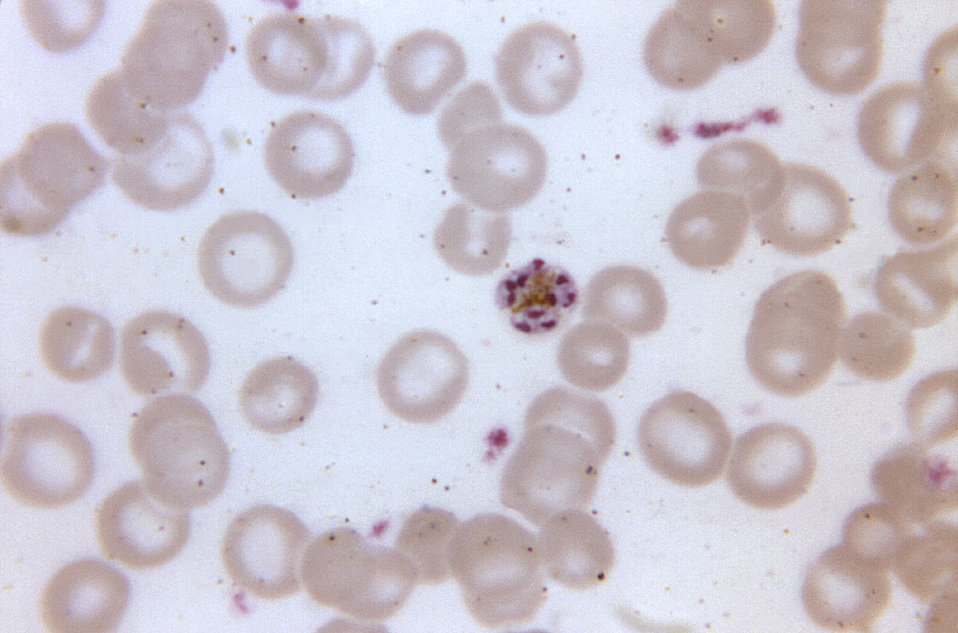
This thin film blood smear micrograph depicts a mature Plasmodium malariae schizont, which contains nine merozoites.